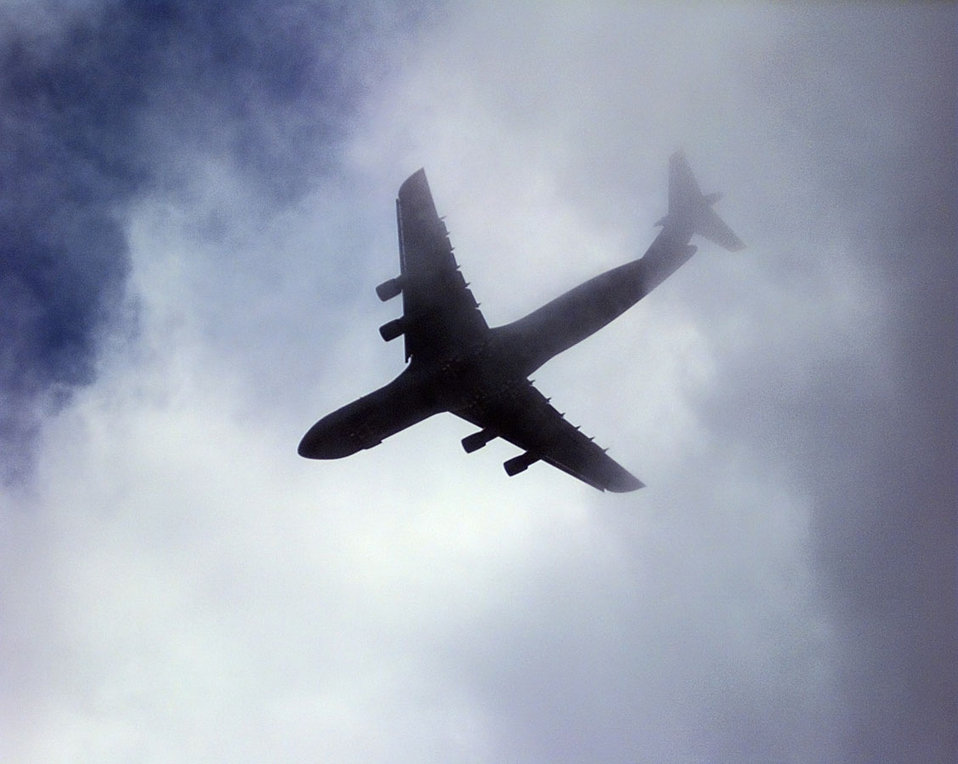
Rodeo arrival

MCCHORD AIR FORCE BASE, Wash. -- A C-5 Galaxy from the 439th Air Wing Westover, Mass., arrives here for the Air Mobility Rodeo competition. Rodeo '98 is a competition designed to improve the skills of airlift crews around the world.